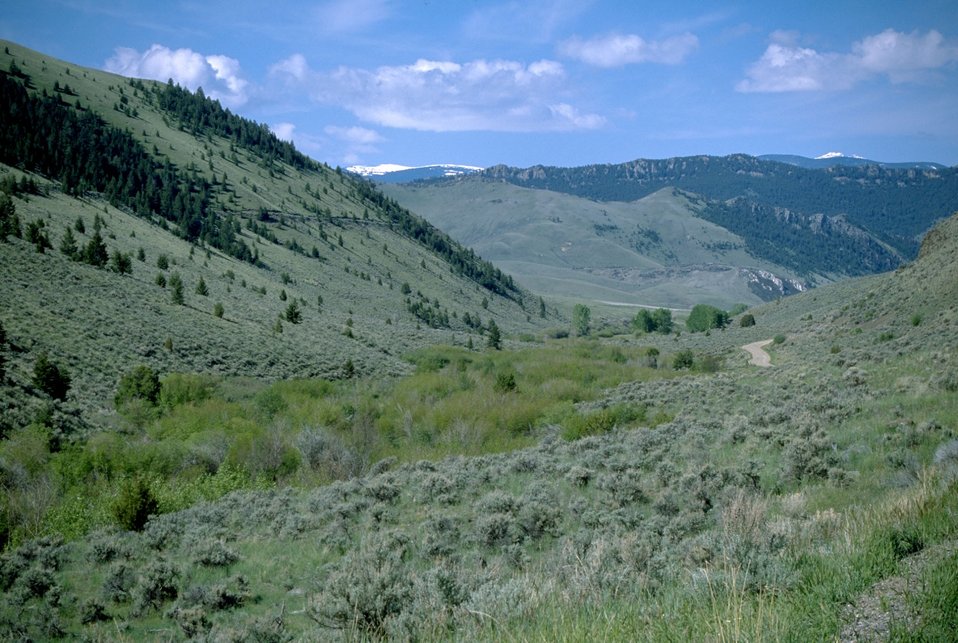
Sagebrush hillsides with snow-capped mountains in the background